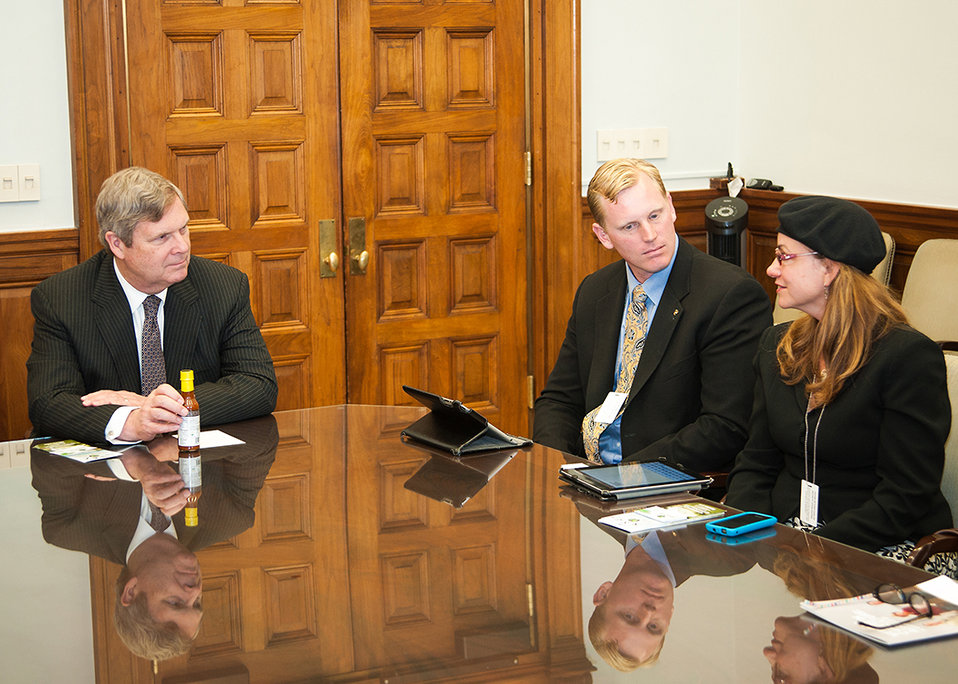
(L to R) Agriculture Secretary Tom Vilsack, Archi’s Acres and Veteran’s Sustainable Agriculture Training (VSAT) users Colin and Karen Archipley discuss the experience and knowledge they have with their farm and the Veteran’s Sustainable Agriculture Training (VSAT) at the U.S. Department of Agriculture (USDA) in Washington, D.C. on Tuesday, Apr. 3, 2013. Archie’s Acres in association with a local university offers the Veteran’s Sustainable Agriculture Training (VSAT) program to active-duty military, veterans and anyone interested in sustainable agriculture as a career. The Archipleys run a state-of-the-art, organic, hydroponic greenhouse operation in Escondido, CA. The farm produces basil, kale, avocados and a variety of other crops for the local market.